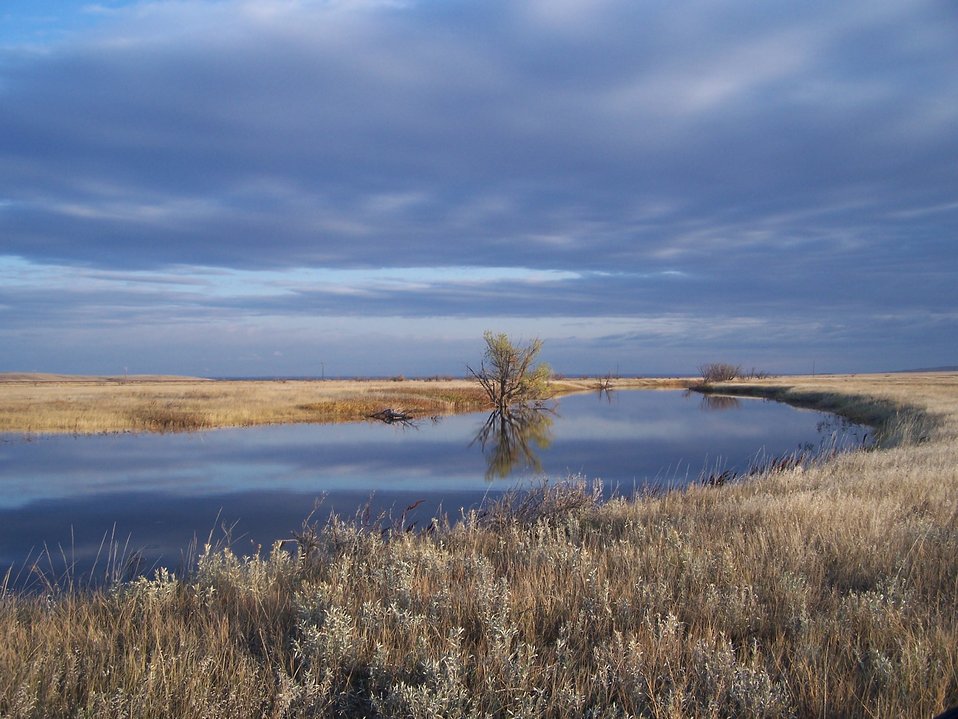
Beaver Creek WPA is just one of 9 Waterfowl Production Areas in the Bowdoin WMD.